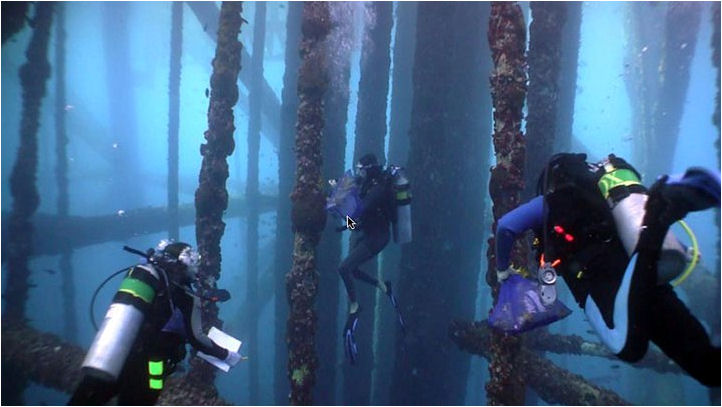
May 2012, EPA divers survey oil platforms for invasive species

Near the Flower Gardens National Marine Sanctuary

More about EPA's work in the Gulf of Mexico www.epa.gov/gulfcoasttaskforce/

For more information about the Marine Sanctuary @ flowergarden.noaa.gov/

U.S. EPA Photo
Pictured: Roland Ferry - EPA Atlanta, Tara Houda - EPA Atlanta, and Tonya Shearer, GaTech